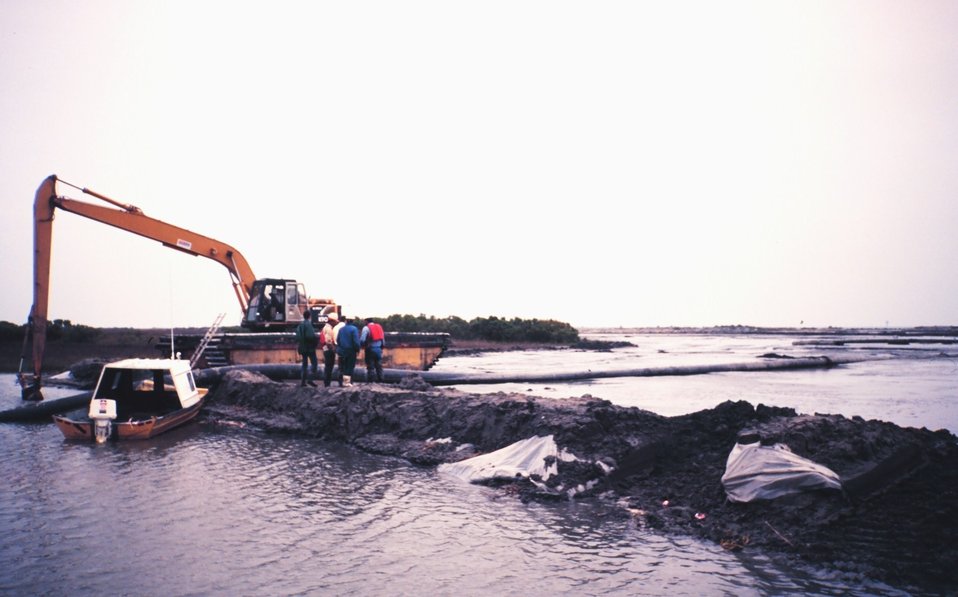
The Greenhill/East Timbalier dredge deposition -- backhoe is used to move pipe to evenly distribute the dredge material.